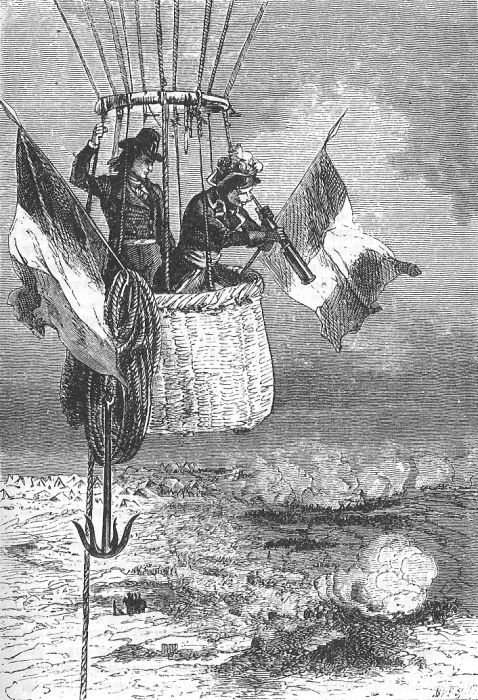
An illustration from Jules Verne's short story 'A Drama in the Air' (1851) drawn by Émile-Antoine Bayard. Polski: Ilustracja opowiadania Juliusza Verne'a 'Dramat w balonie' (tytuł był przekładany także jako 'Dramat w przestworzach', 1851) autorstwa Émile-Antoine Bayarda. Français : Jules Verne: 'Un Drame dans les airs', par Émile-Antoine Bayard. Orginal description taken from the book: Français : Il resta sept ou huit heures en observation…